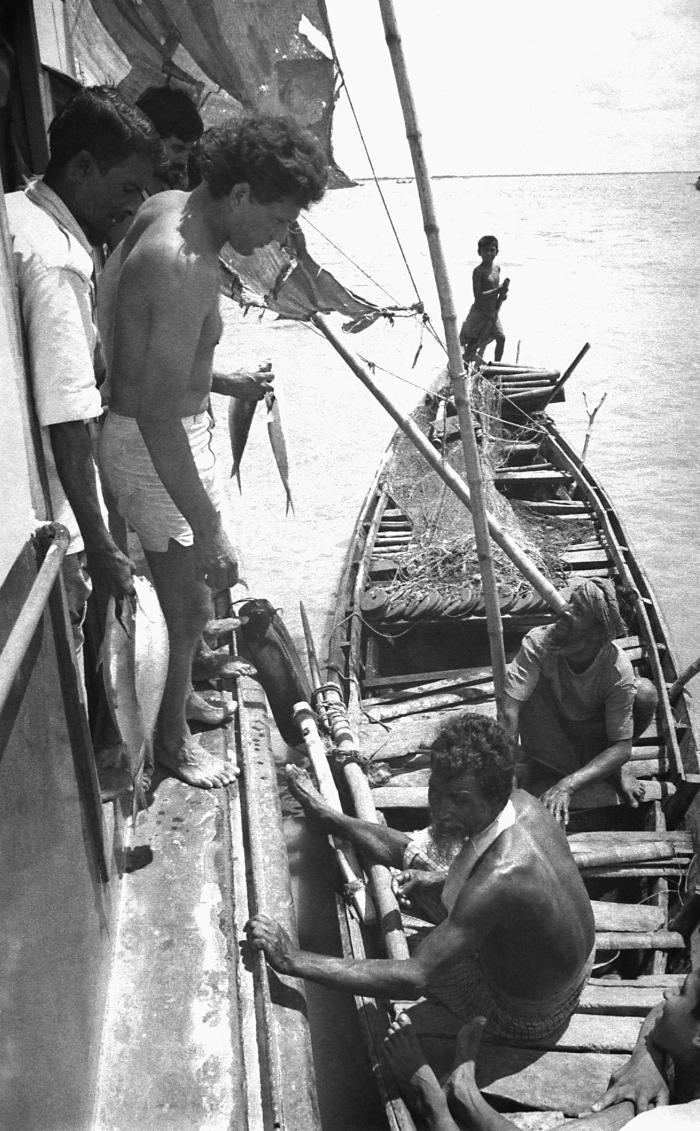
In this image, local Bangladesh fishermen had pulled up alongside a launch, and were selling their catch to passengers on the larger boat. World Health Organization (WHO) epidemiologist, Dr. Daniel Tarantola, was standing on the large boat's edge (shirtless). In 1974, Dr. Tarantola had been appointed as a smallpox eradication team leader in Bangladesh. This image was part of a series provided by Dr. Stan Foster, and captured by Pierre Claquin, M.D., B.A.C., who at the time was a member of the World Health Organization's Smallpox Eradication Program. It was part of a series photographed by former E.I.S. officer, Stanley O. Foster M.D., M.P.H., and was one of a series entitled 'The Story of One Smallpox Jeep', which depicted the travails faced by the jeep, and its occupants of public health practitioners, as they road through the Bangladesh countryside in an attempt to eradicate smallpox from the country.